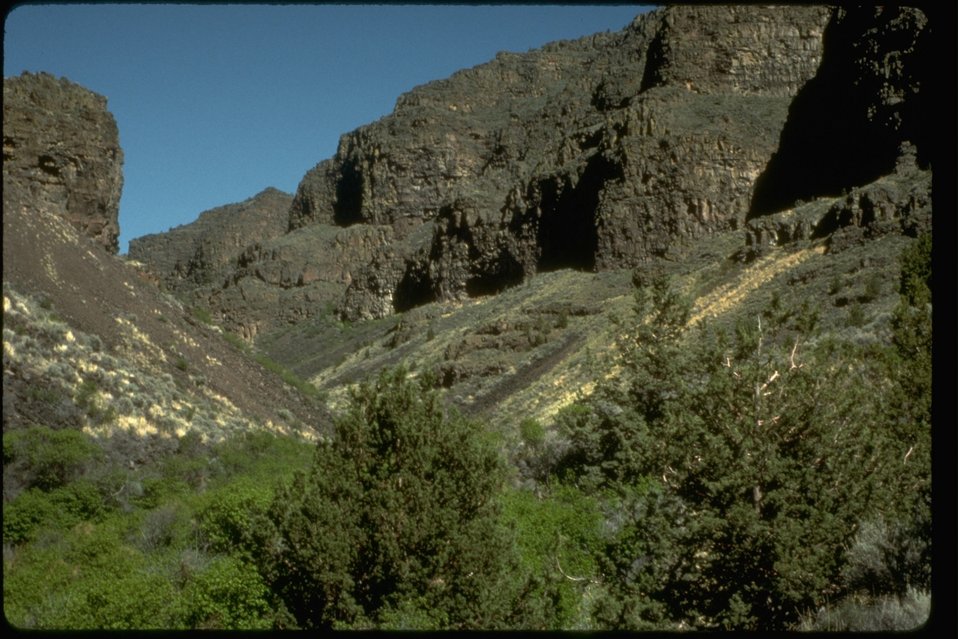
Home Creek Drainage. OR 2-85H